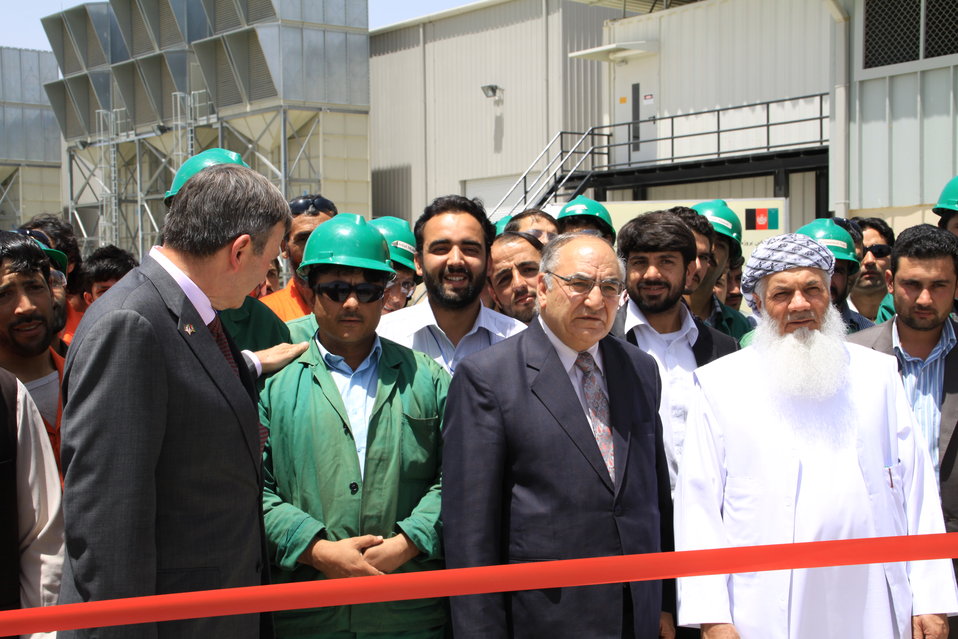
105 MW Tarakhil Power Plant Handover